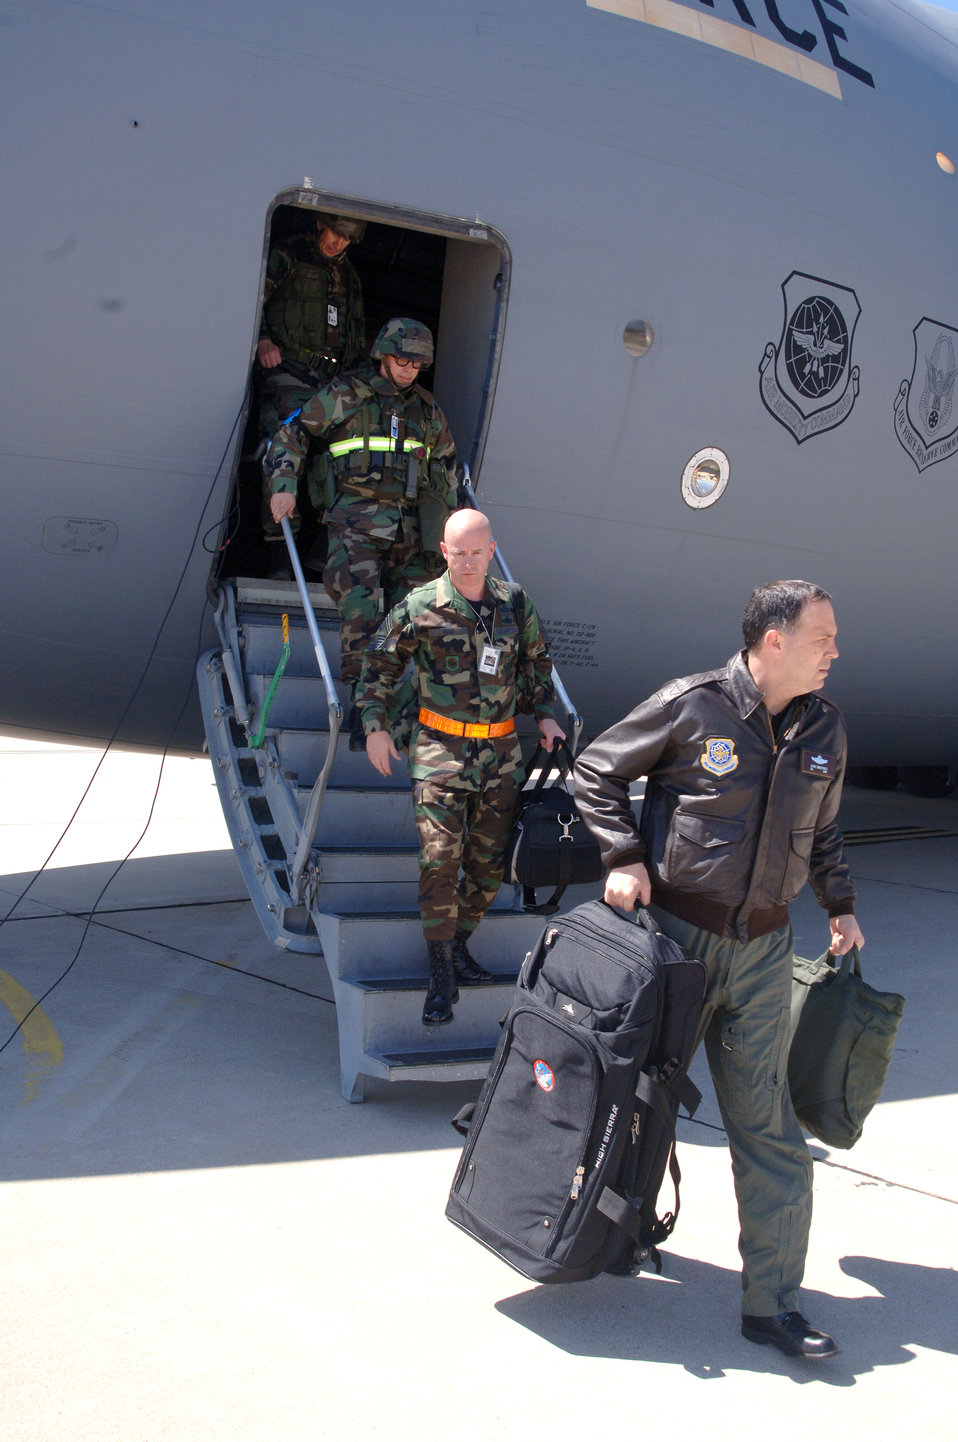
Exercise Thunderbolt

Col. Jerry Martinez and Chief Master Sgt. Russell Kuck disembark a C-17 Globemaster III from McChord Air Force Base, Wash., during Exercise Thunderbolt at Alpena, Mich., on Monday, May 8, 2006. Colonel Martinez is commander and Chief Kuck is command chief of the 62nd Airlift Wing at McChord.